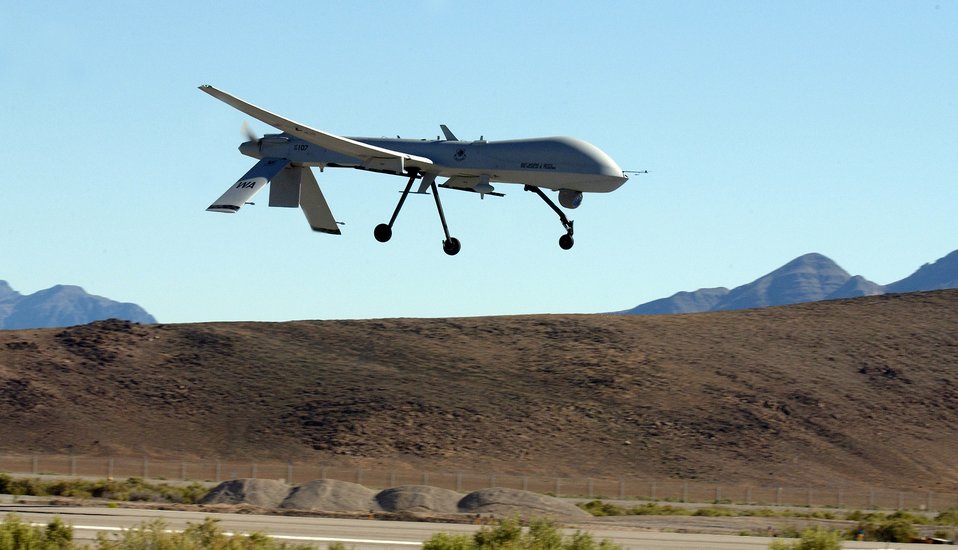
Predator flies unprecedented combat flight hours

OVER NEVADA -- An MQ-1 Predator makes its final approach to Indian Springs Auxiliary Field. The Predator has flown more than 27,000 hours supporting operations Enduring Freedom and Iraqi Freedom from June 2004 to June 2005.